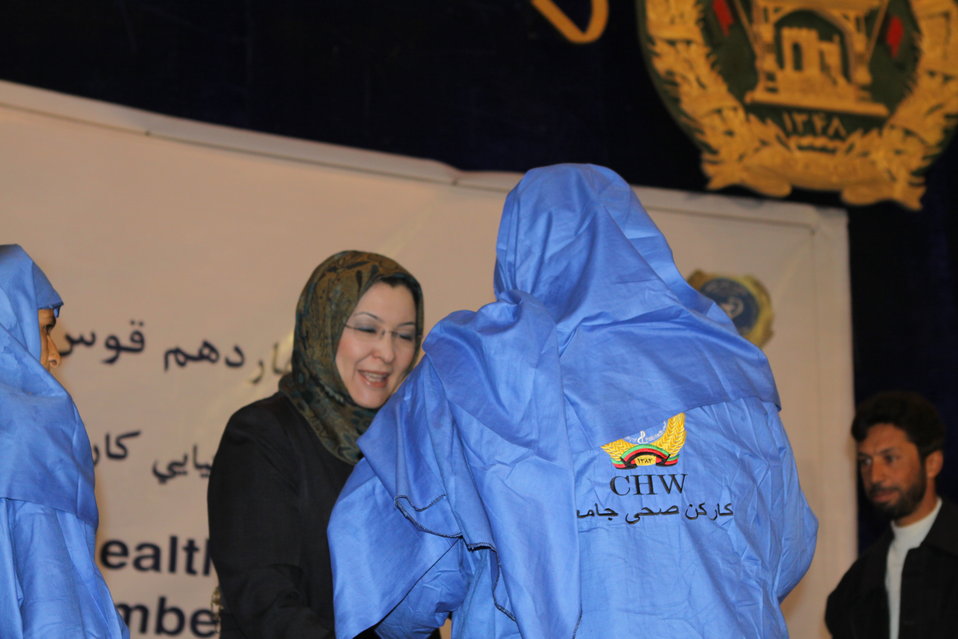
Community Health Workers Celebrated

Kabul, Afghanistan | December 5, 2010 — In support of the United Nations designated International Volunteer Day for Economic and Social Development, Afghanistan’s Ministry of Public Health celebrated its annual Community Health Worker Day today. Acting Minister of Public Health Dr. Suraya Dalil, USAID Senior Deputy Mission Director Robert Hellyer, other government officials, and international donors joined in recognizing the critical contribution of community health workers in Afghanistan and encouraging them to continue their voluntary support to their communities.
The event praised the contributions of the more than 22,000 volunteers throughout the country who deliver community level health-education, counseling, and services out of village health posts located in private homes. The Ministry of Public Health envisioned that community-based healthcare programs will actively encourage communities and families to adopt healthy lifestyles and behaviors, and provide families access to high quality and socially acceptable preventative medicine and life-saving services.
“We have 22,000 community health workers in Afghanistan that are able to implement the basic and standard medicines. They all have been trained through a job description,” said Minister Dalil. Addressing the health workers, she added, “I am proud and feel powerful that I have people like you.”
USAID-funded health projects collaborate closely with the Ministry of Public Health to improve the health and nutritional status of Afghans, provide quality primary healthcare, and promote healthy behaviors at the community and household-levels. USAID supported the training of more than 9,000 of the volunteer community health workers currently working in Afghanistan.
“On behalf of the American people, I congratulate the Community Health Workers for their diligence to gain the skills and knowledge necessary to serve their communities in this important role,” said USAID Senior Deputy Mission Director Hellyer. “USAID strongly supports community based health care and believes that quality community-based health services are essential to reaching Afghanistan’s Millennium Development Goals.”
To support the Basic Package of Health Services, USAID assisted in developing the community health worker training manual, helped train community health worker supervisors and master-trainers, facilitated in-service training, and produced and developed reporting tools, job aids, and education materials.